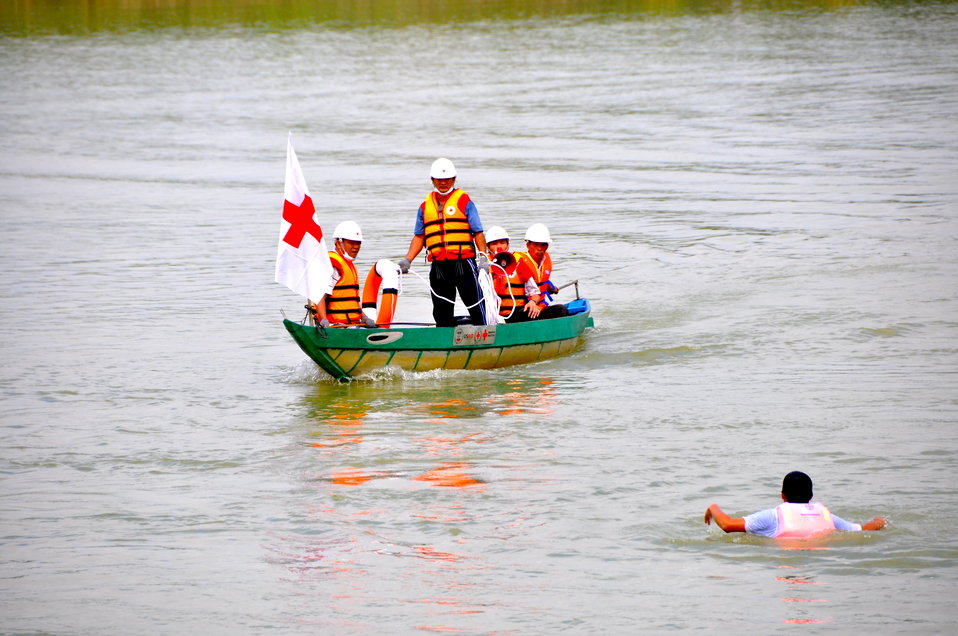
USAID, Red Cross Support Disaster Response Drill in Duy Hoa Commune, Quang Nam Province

Duy Hoa Commune, Quang Nam Province
December 5, 2012